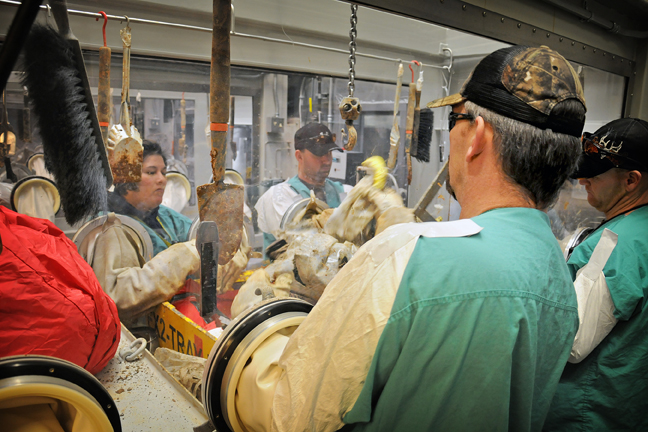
Recovery Act funds buried waste exhumation at Idaho Site’s Pit 9

Workers sort through exhumed waste in a glovebox, or shielded enclosure, to repackage it for future shipment off site.